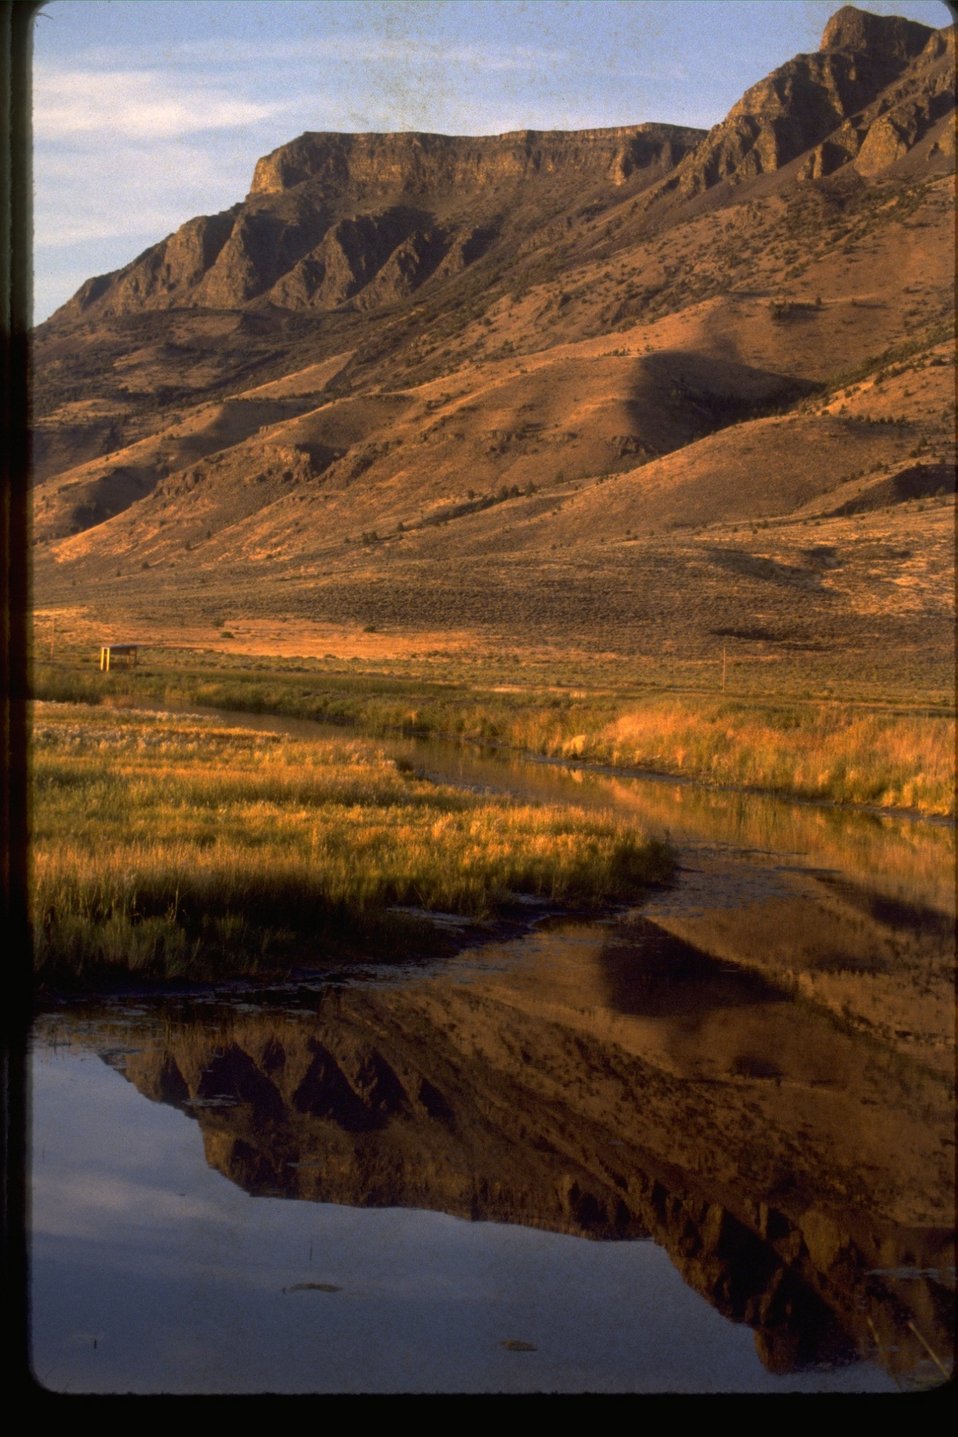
Sunset at the Warner Wetlands.